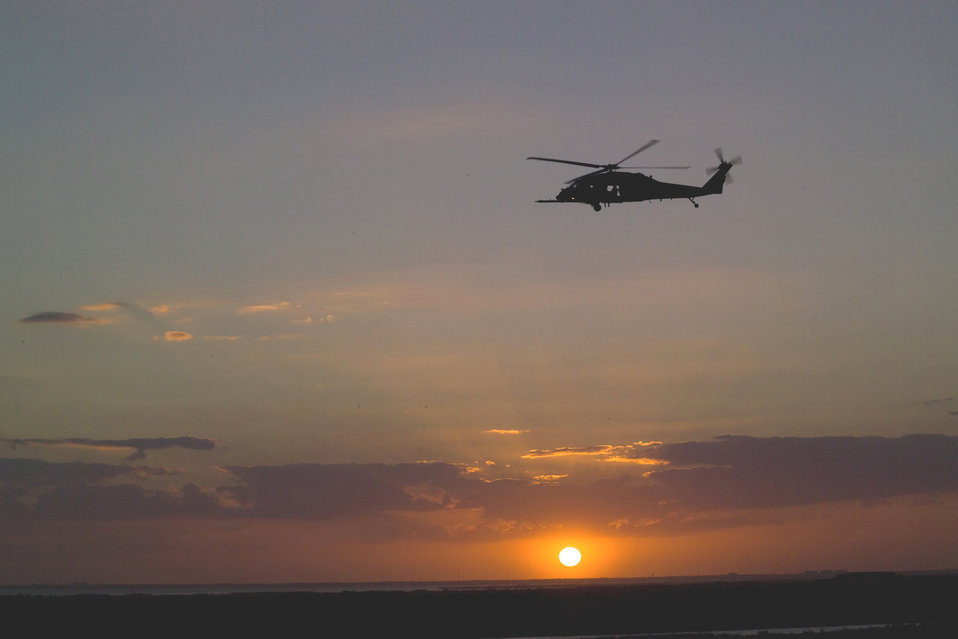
Rescue Airmen support shuttle launch

An HH-60G Pave Hawk helicopter patrols the sky in preparation for launch of Space Shuttle Discover March 15 over NASA's Kennedy Space Center, Fla. Airmen of the 920th Rescue Wing provide first-response emergency medical and search-and-rescue support for every NASA shuttle and rocket launch.